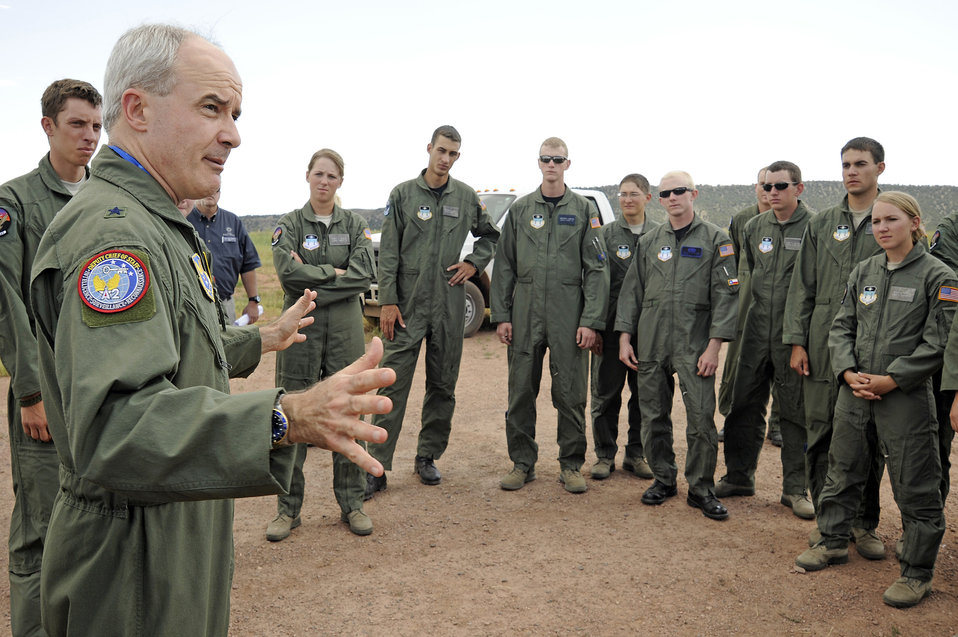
Academy officials add unmanned aircraft system into curriculum

Brig. Gen. James O. Poss briefs the 25 cadets that make up the initial training class on the U.S Air Force Academy's Viking 300 unmanned aircraft systems July 22 at Fort Carson, Colo. General Poss is the director of intelligence, surveillance and reconnaissance capabilities, and the deputy chief of staff for ISR at the Pentagon.